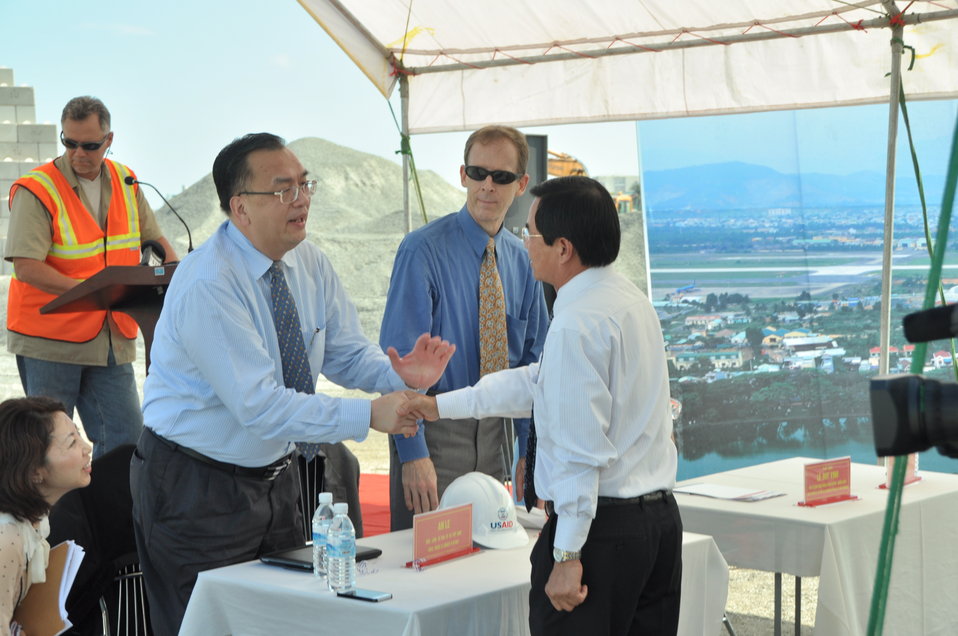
Media Tour of Environmental Remediation of Dioxin Contamination at Danang Airport

Danang, Vietnam
April 24, 2013